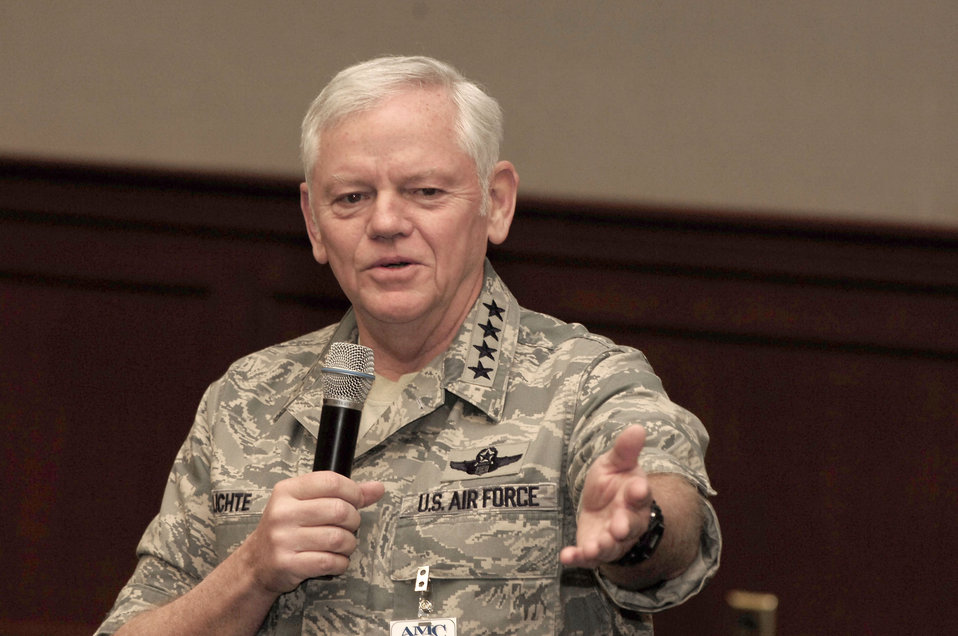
Phoenix Rally celebrates 60th Anniversary of Berlin Airlift

Gen. Arthur J. Lichte speaks to Air Force leaders during the 2008 Phoenix Rally conference March 21 at MacDill Air Force Base, Fla. The purpose of the conference was to shape the Air Mobility Command, display the legacy of global reach and hope, and to commemorate the 60th anniversary of the Berlin Airlift. General Lichte is the AMC commander.